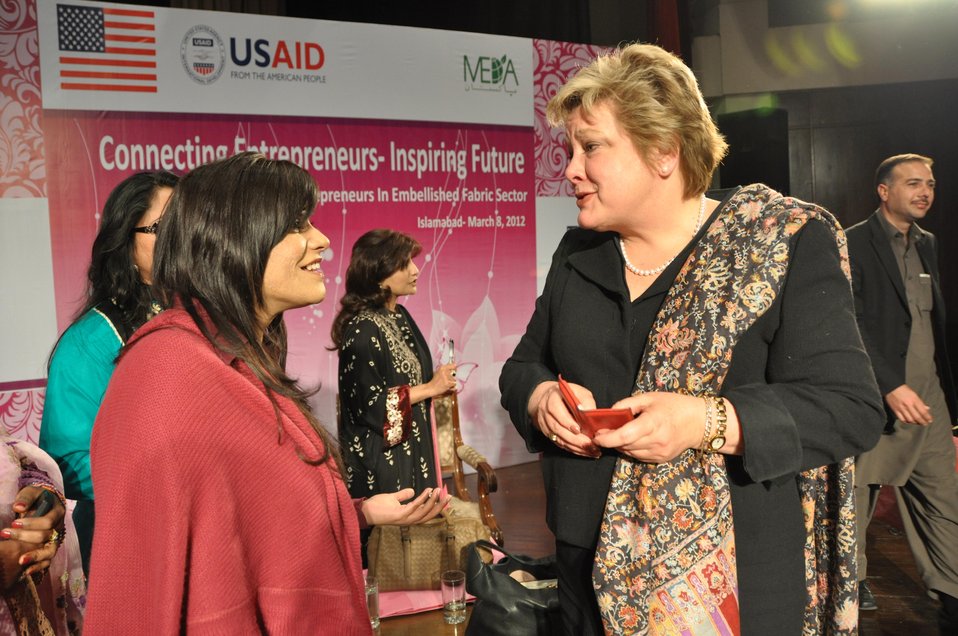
International Women’s Day

Islamabad, March 08, 2012 - The United States Agency for International Development (USAID) celebrated International Women’s Day, hosting a panel discussion with women entrepreneurs.
Panel members in addition to USAID’s
- Karen Freeman
- Wajeeha Nasreen, Sr. Product Development Manager, Gul Ahmed (famous Pakistani fabric brand)
- Dr. Nosheen, CEO, Generations (famous clothing brand)
- Razia Zubairi, Director General, Technical Education and Vocational Training Authority, Punjab
- Shaheen Khan, Sales Agent, ECDI, USAID sub-grantee